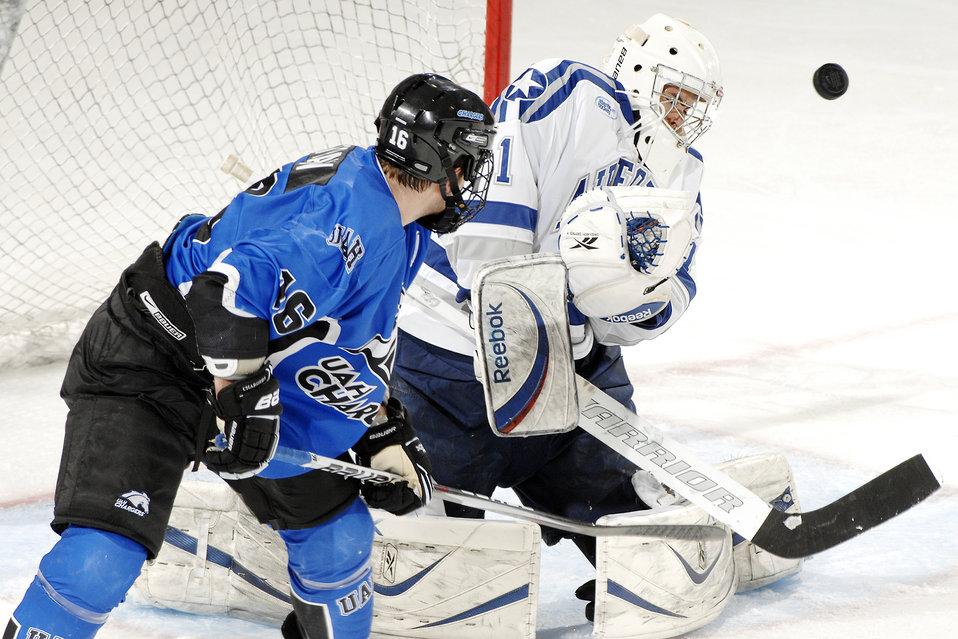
Falcons get out-Charged!

U.S. Air Force Academy senior goalie Andrew Volkening makes the save against the University of Alabama-Huntsville Chargers Oct. 17, 2009, at the Cadet Ice Arena. The UAH Chargers held off the Falcons for a 4-2 win as Volkening allowed four goals and made 23 stops.